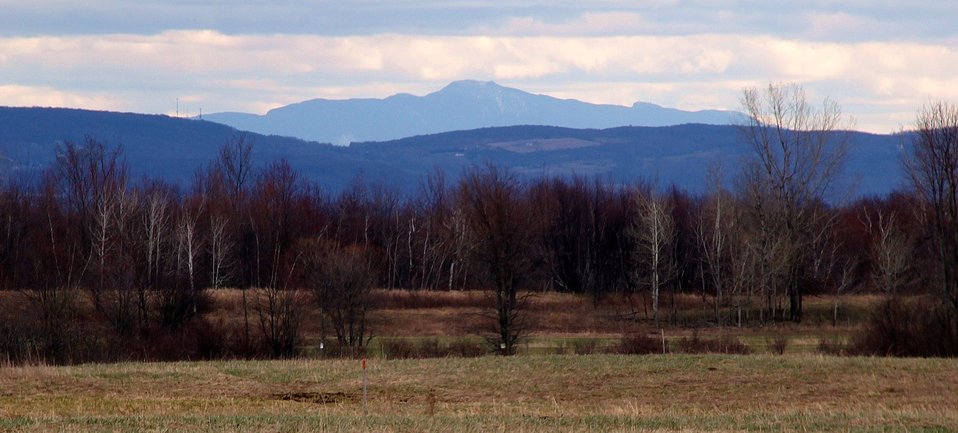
Mount Mansfield from Missisquoi National Wildlife Refuge

View of the highest peak in Vermont from Missisquoi NWR